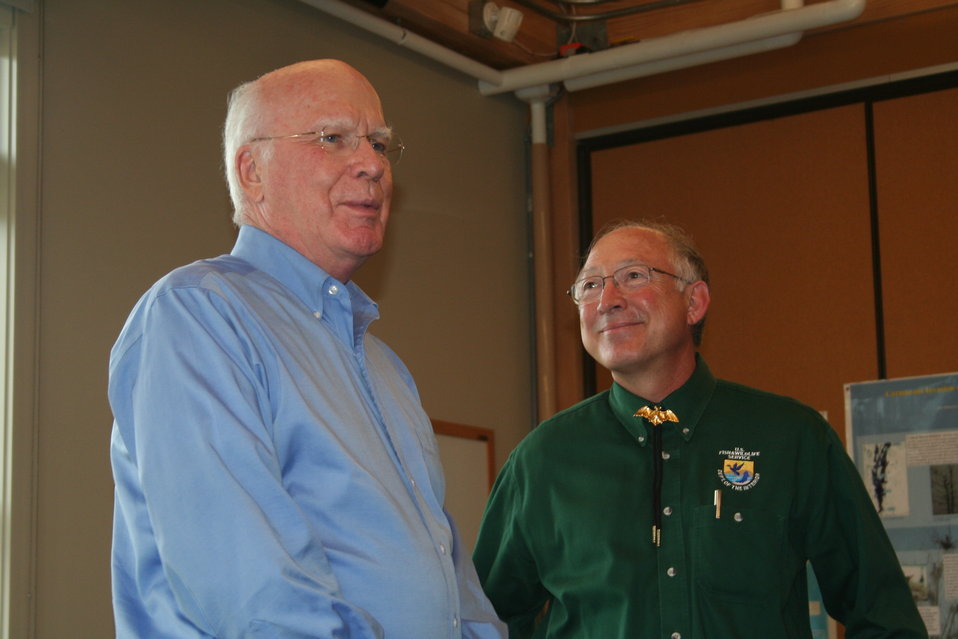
Senator Leahy and Secretary Salazar

Senator Leahy (VT, left)and Department of Interior Secretary Salazar (right) address stakeholders at Missisquoi NWR.